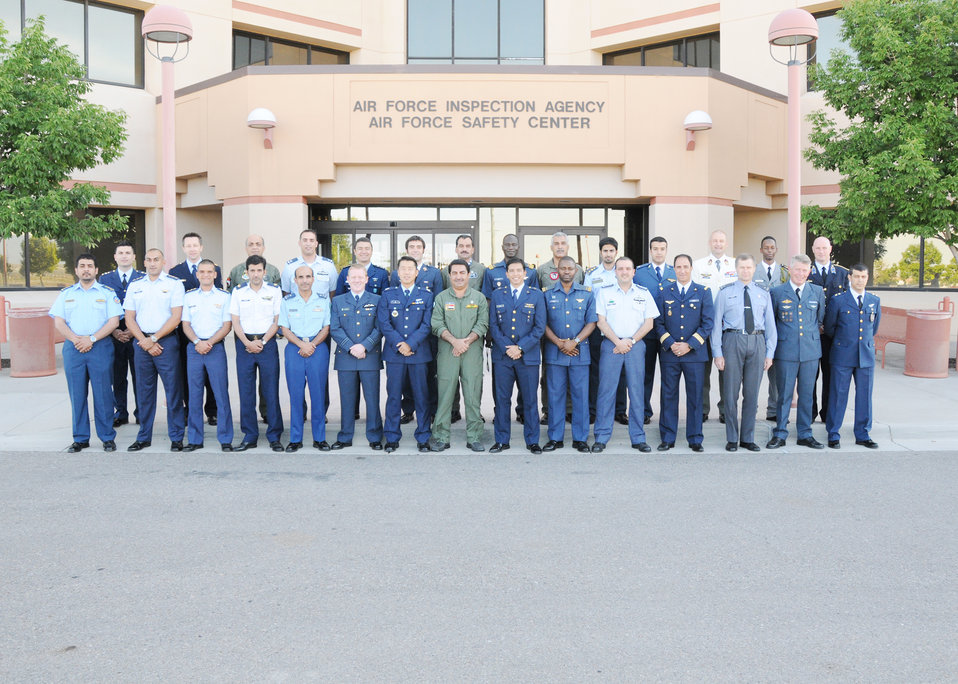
Iraqi students attend safety course

Maj. Gen. Frederick Roggero, Air Force chief of safety and Air Force Safety Center commander, welcomes the latest class of students, including four Iraqi students, to the AFSC International Flight Safety Officer Course at Kirtland Air Force Base, N.M. During the 25-plus-year history of the IFSO course, this is the first time Iraqi students have attended, making Iraq the 80th country on the approved course list.